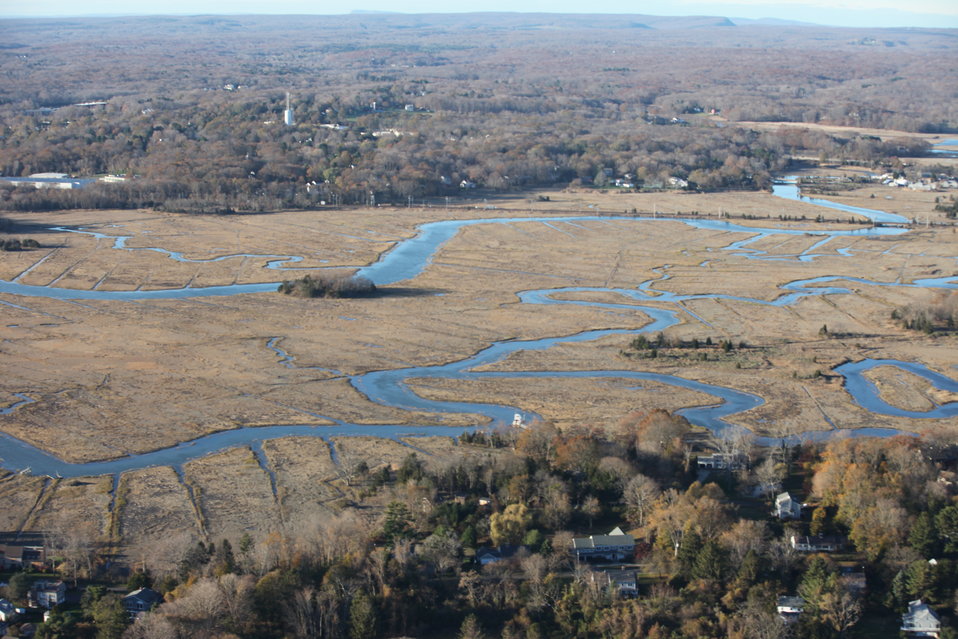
Stewart B. McKinney National Wildlife Refuge-Guilford Wetlands (CT)

Aerial view of Guilford Wetlands an area that the U.S. Fish and Wildlife Service is involved in a conservation effort near the refuge.